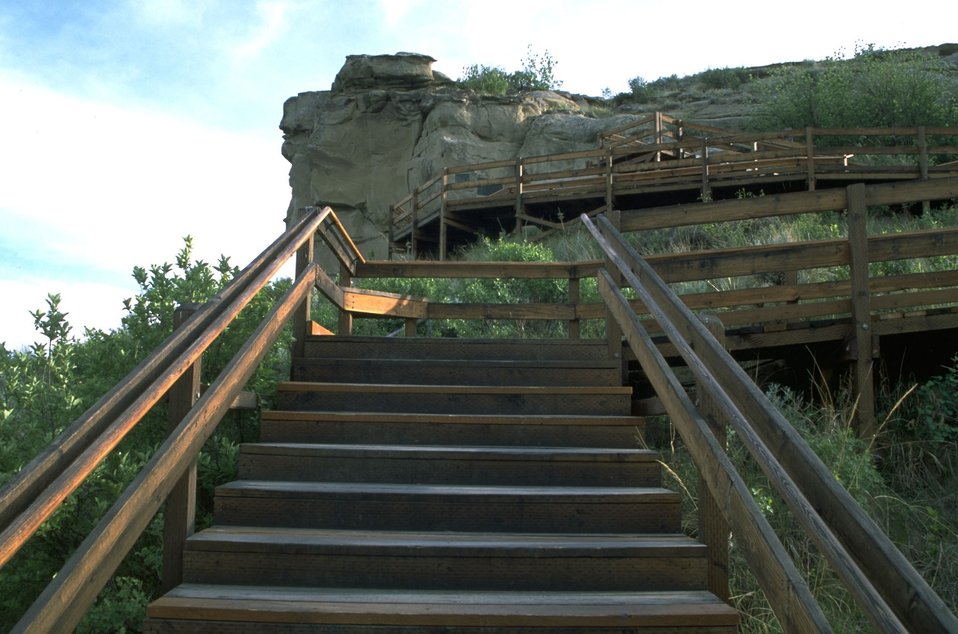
Broadwalk leading to the Signature Area on Pompeys Pillar